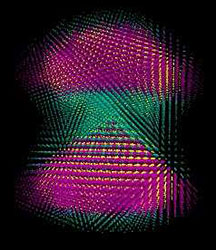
Visualization of the S-orbitals of two individual quantum dots. The presence of significant S-orbitals between the dots indicates that tunneling is probable between the structures. While the structures are not connected physically, they are connected via quantum tunneling. They also created visualizations that show the orbitals and linear combinations of these orbitals as well as lines whose intersections show the locations of the atoms.